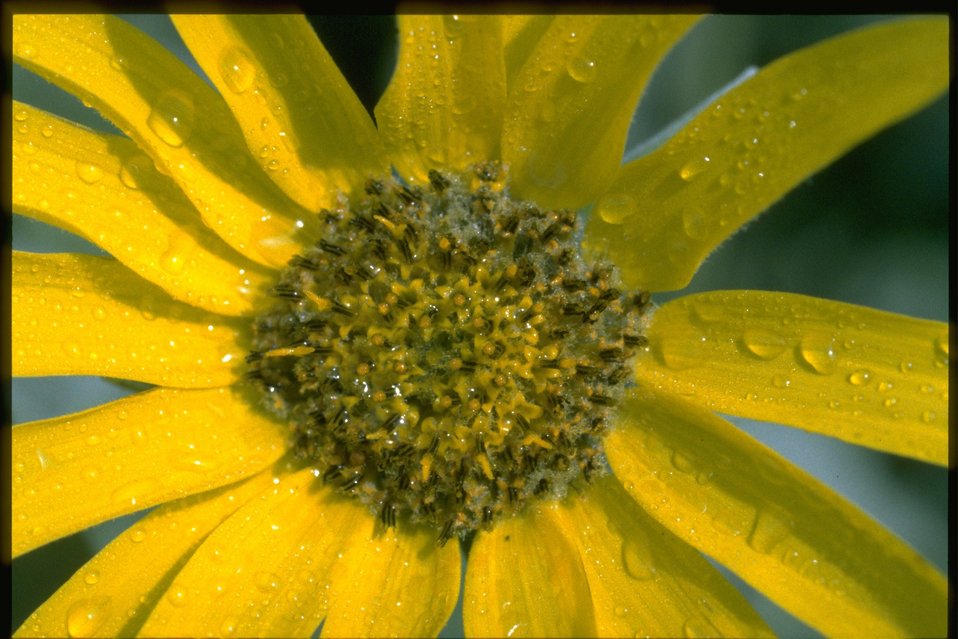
Closeup shot of Arrowleaf Balsam Root (Balsamorhiza sagittata).